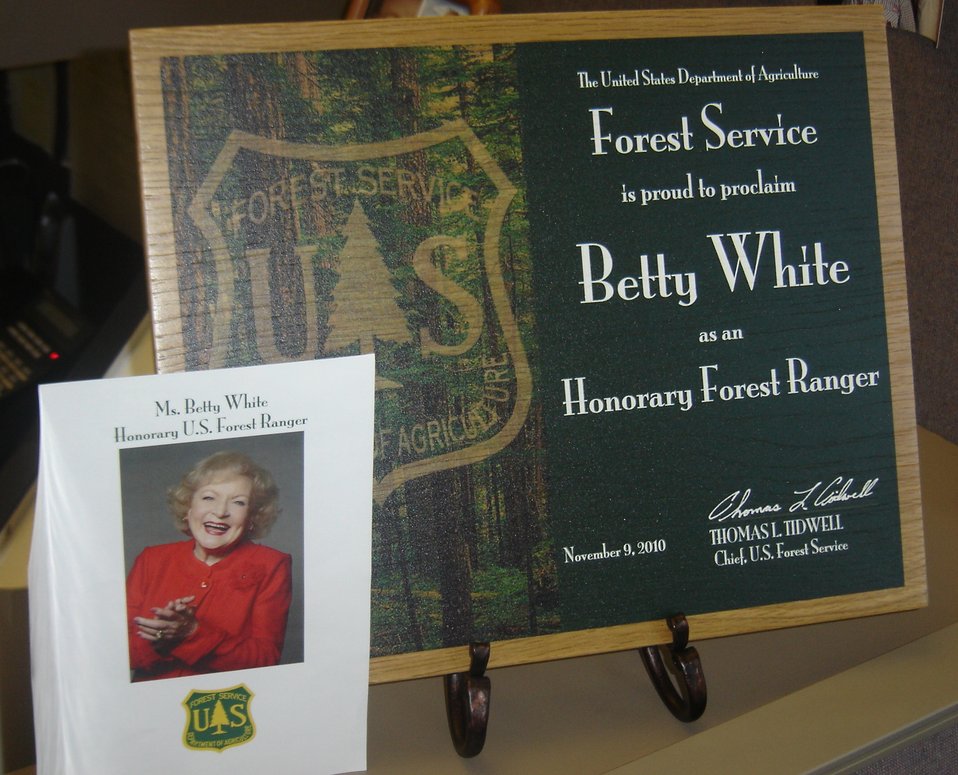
B White plaque-11-09-10

This is the Honorary Ranger certificate that was presented to actress Betty White November 9 at the Kennedy Center for the Performing Arts, fulfilling a childhood dream the actress expressed several months ago.